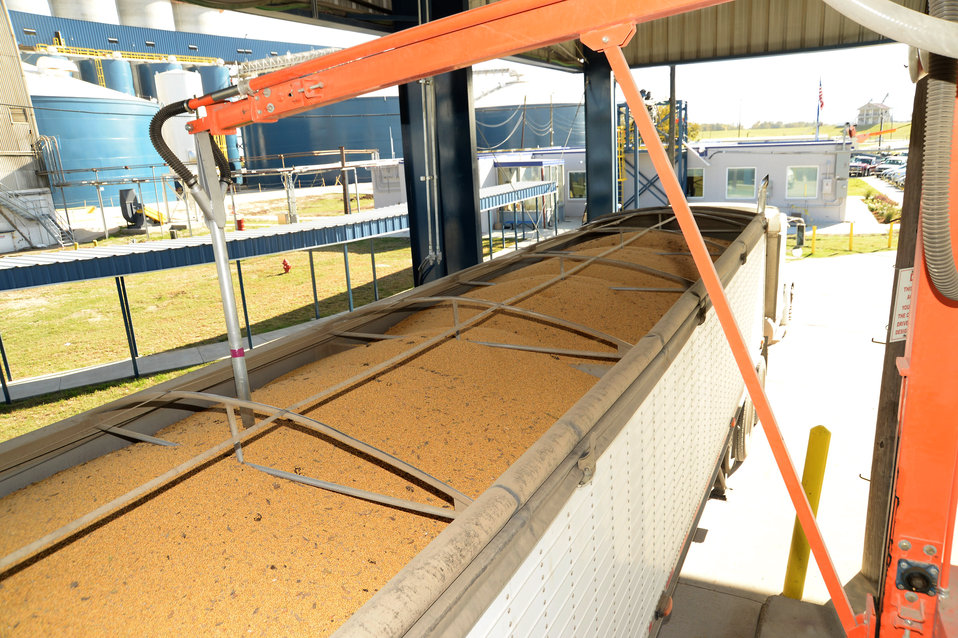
A sample of grain is removed from a barge for testing at the U.S. Department of Agriculture’s (USDA) Grain Inspection, Packers and Stockyards Administration (GIPSA) Federal Grain Inspection Service (FGIS) laboratory in New Orleans, LA on Tuesday, Nov. 19, 2013.